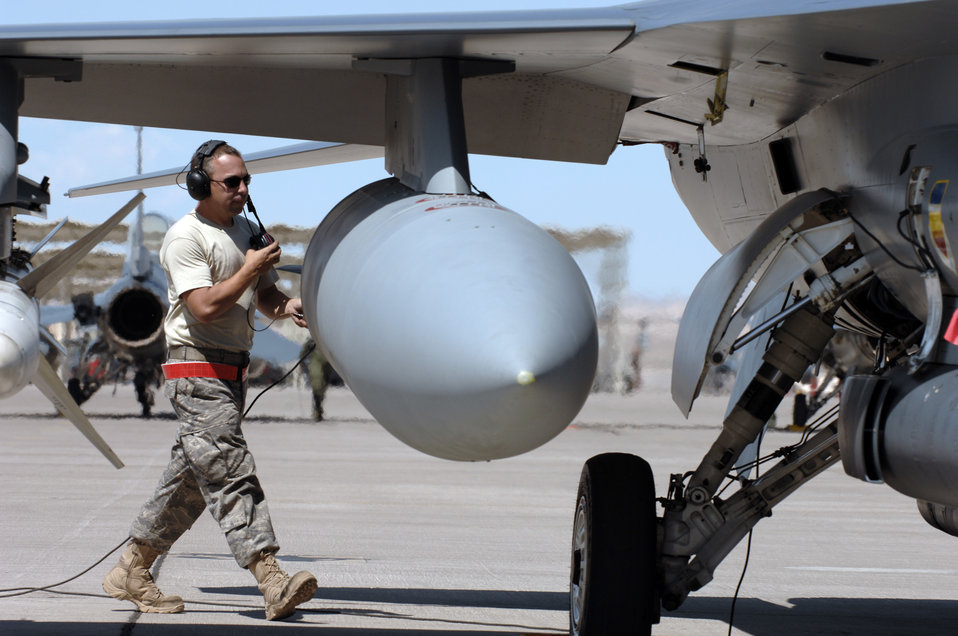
Realistic training with Red Flag

Staff Sgt. William Reeder goes over pre-flight checks before launching a F-16CJ Wild Weasel at Red Flag 09-4 July 16 at Nellis Air Force Base, Nev. Red Flag is a highly realistic combat training exercise that pits U.S. and allied nation air forces against